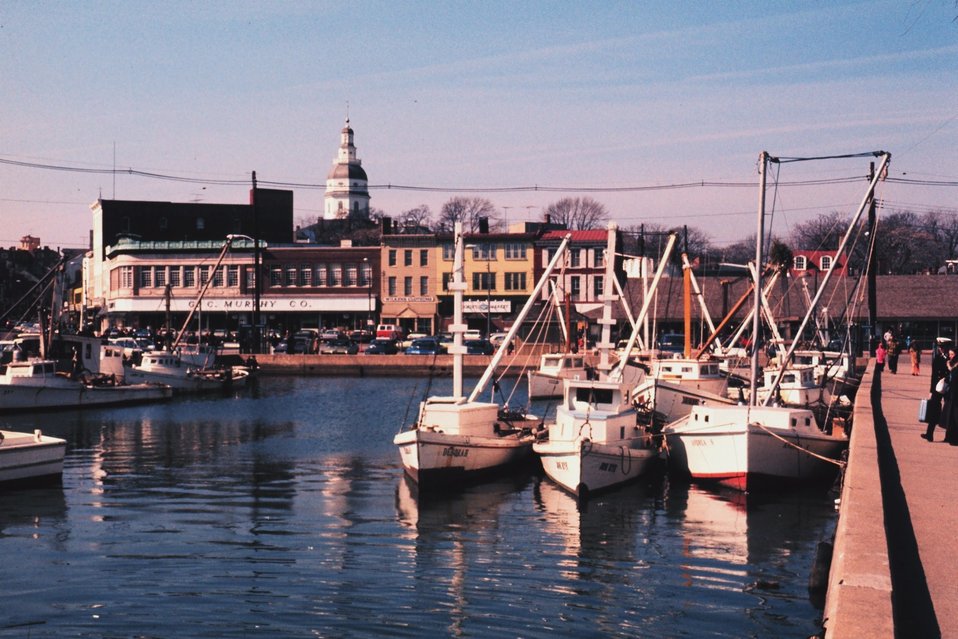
Part of the Chesapeake Bay oyster dredging fleet with statehouse in the back ground.